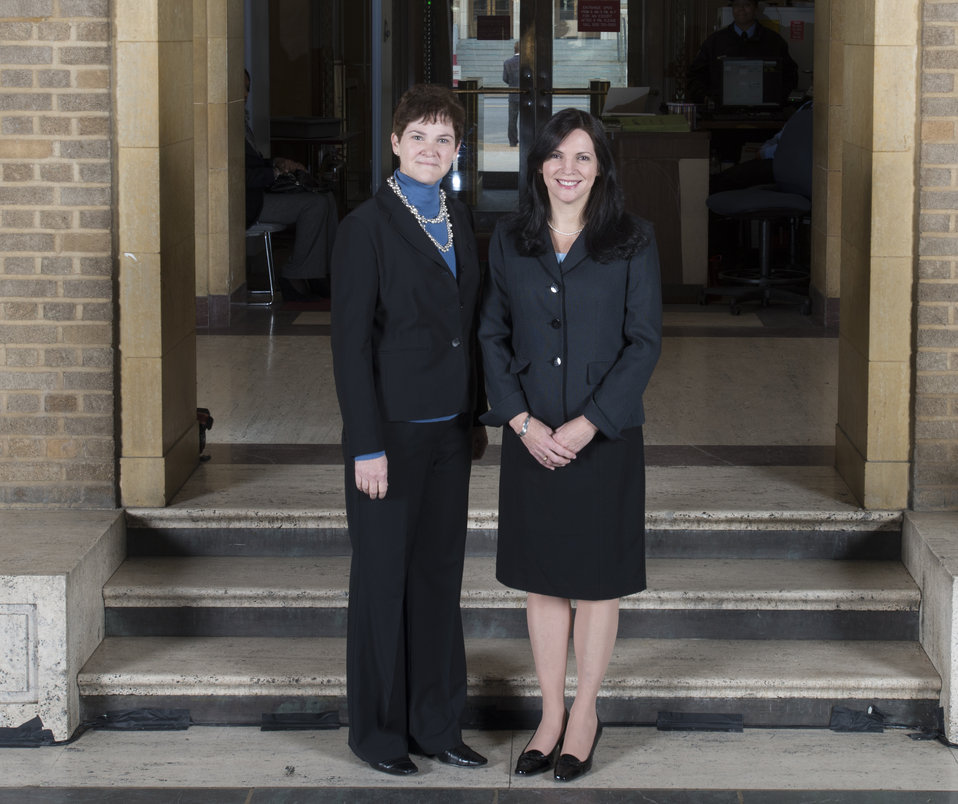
Agriculture Deputy Secretary Krysta Harden stands with a member of the H7N9 avian influenza research team, Agricultural Research Service (ARS) from Athens, GA on the patio at the U.S. Department of Agriculture i(USDA) n Washington, D.C. on Wednesday, Dec. 11, 2013. The team received the Secretary’s Honor Award for coordinated ARS/Animal and Plant Health Inspection Service (APHIS) response to the Chinese H7N9 avian influenza outbreak, which provided critical scientific data necessary for control and diagnosis of the virus nationally and internationally.